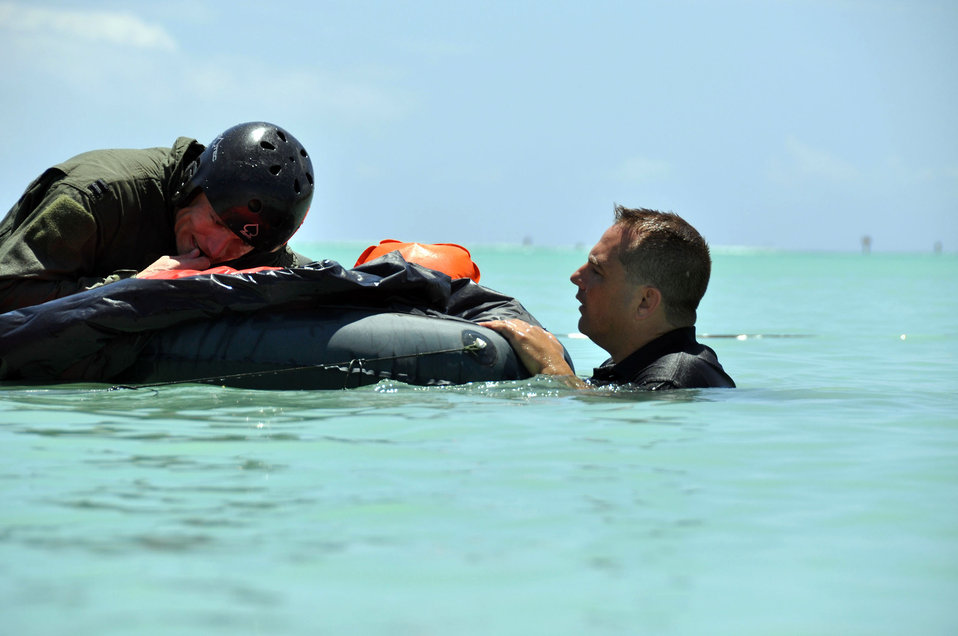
SERE instructors ensure water survival skills

Tech. Sgt. Sherwood Brown monitors the progression of Capt. George Adams, a C-17 pilot with the 535th Airlift Squadron, as he attempts to inflate his one-man life raft during refresher water survival training April 6 in the waters adjacent to Hickam Air Force Base, Hawaii. Sergeant Brown is an Air Force survival, evasion, resistance and escape specialist assigned to the 15th Operations Support Squadron at Hickam.